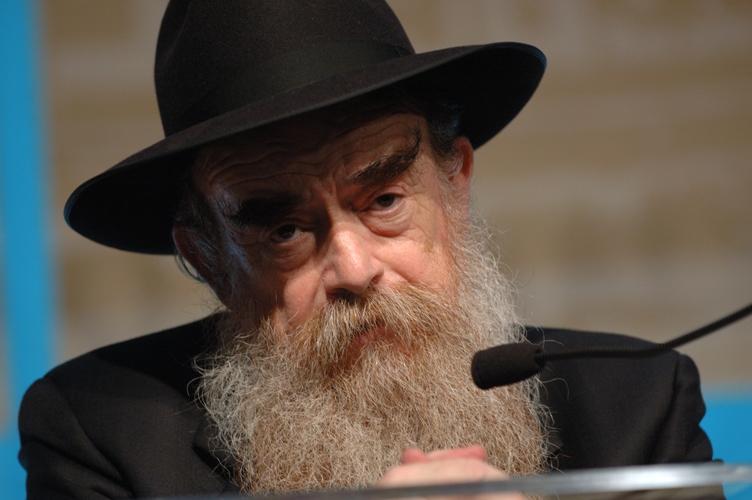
Rabbi Shemtov.